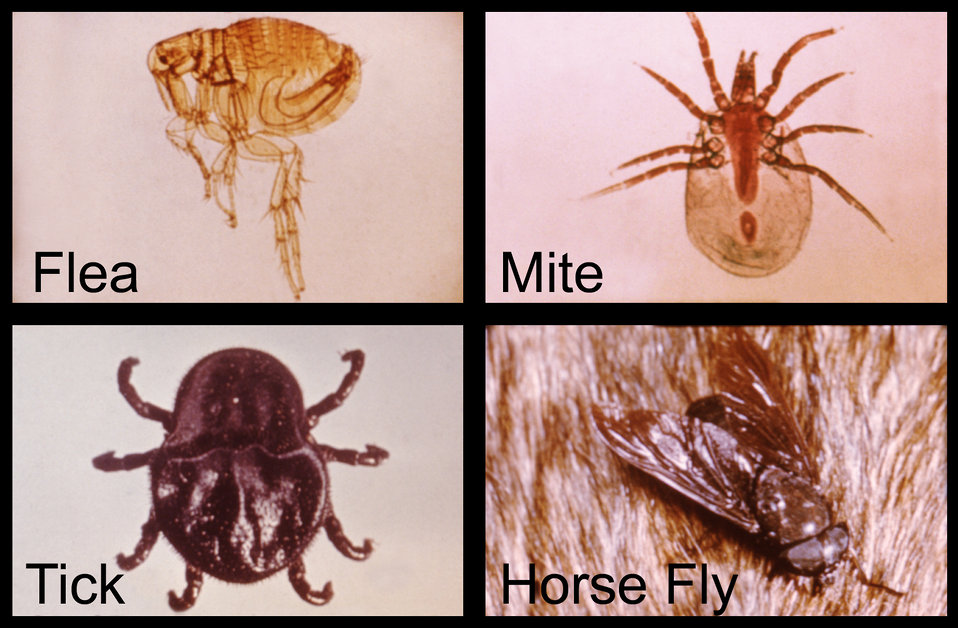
These four arthropods, a flea, mite, tick, and a horsefly, are often the source of many vector-borne infectious diseases.